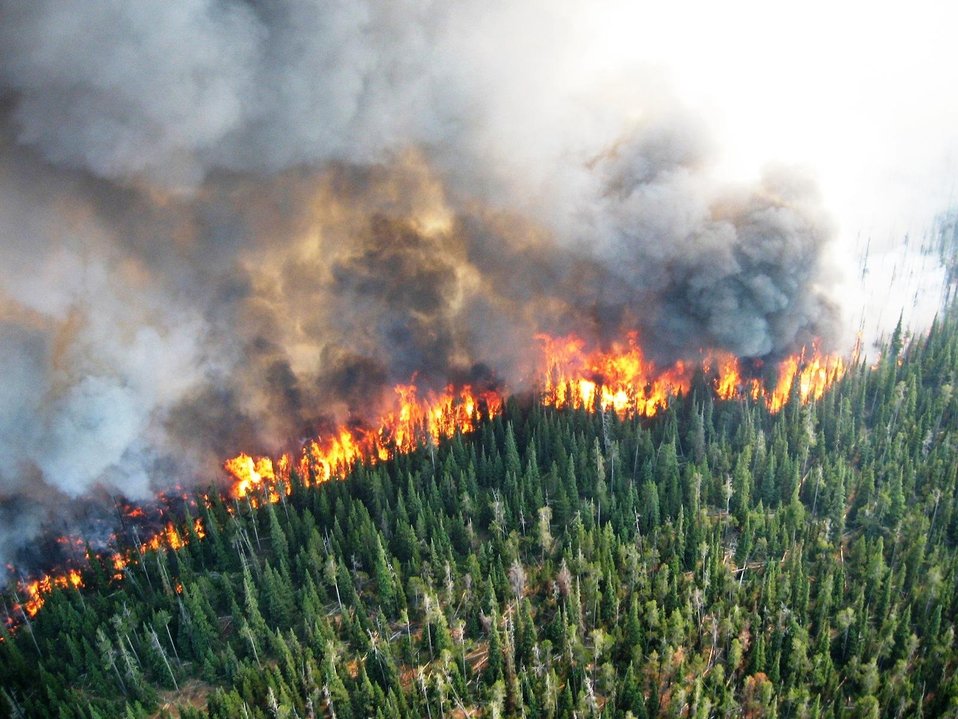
The Moose Meadow Fire in the Beaverhead-Deerlodge National Forest near Philipsbug, MT began on Jul. 25, 2013 by lightning has consumed approximately 3,400 acres and is approximately 30% contained.